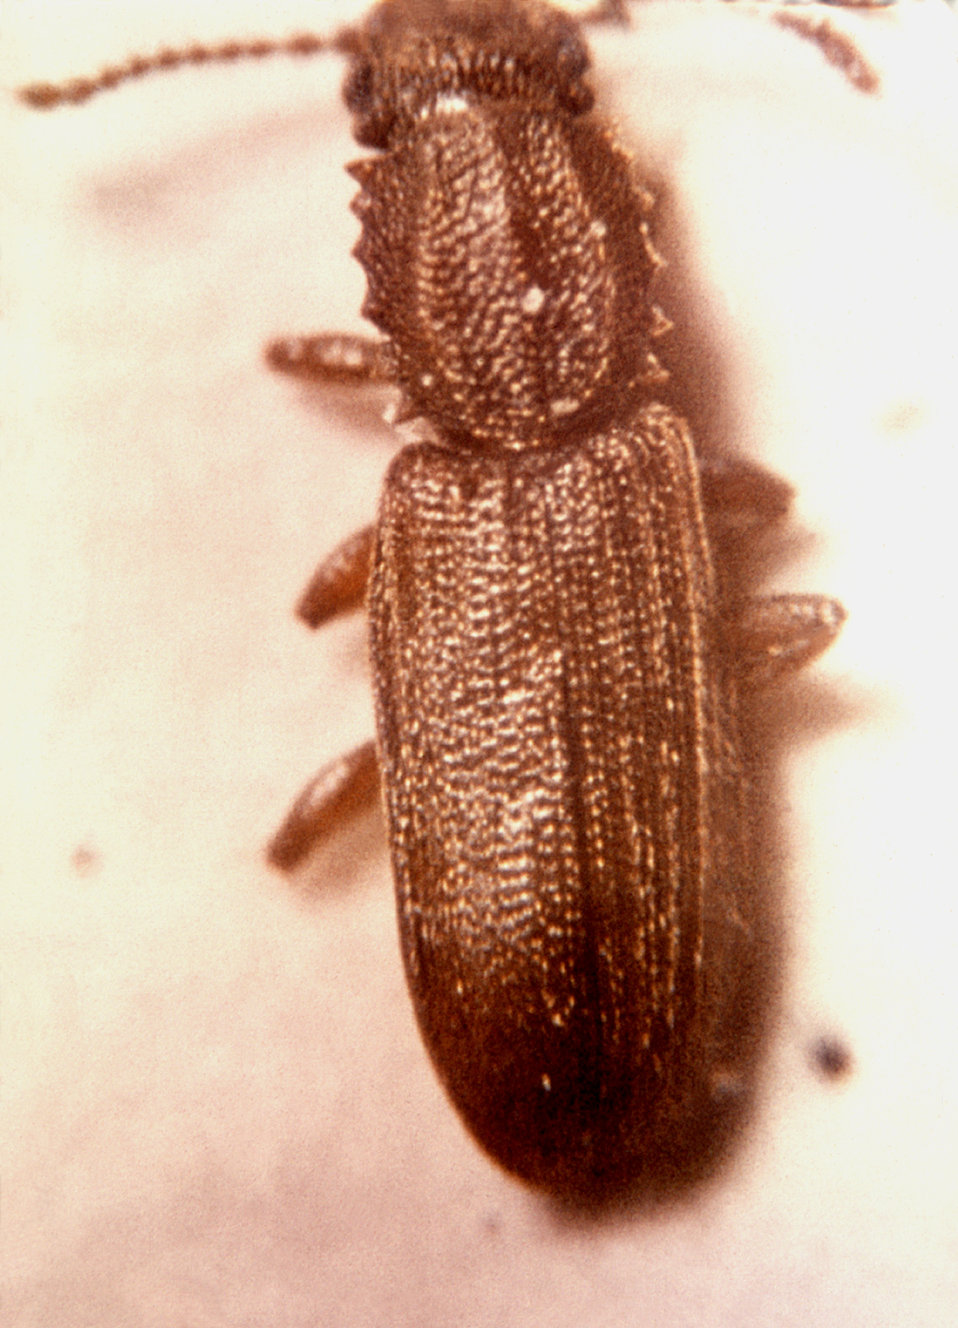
This is a dorsal view of a Oryzaephilus surinamensis otherwise known as a 'sawtoothed grain beetle'; Mag. 7.1X.